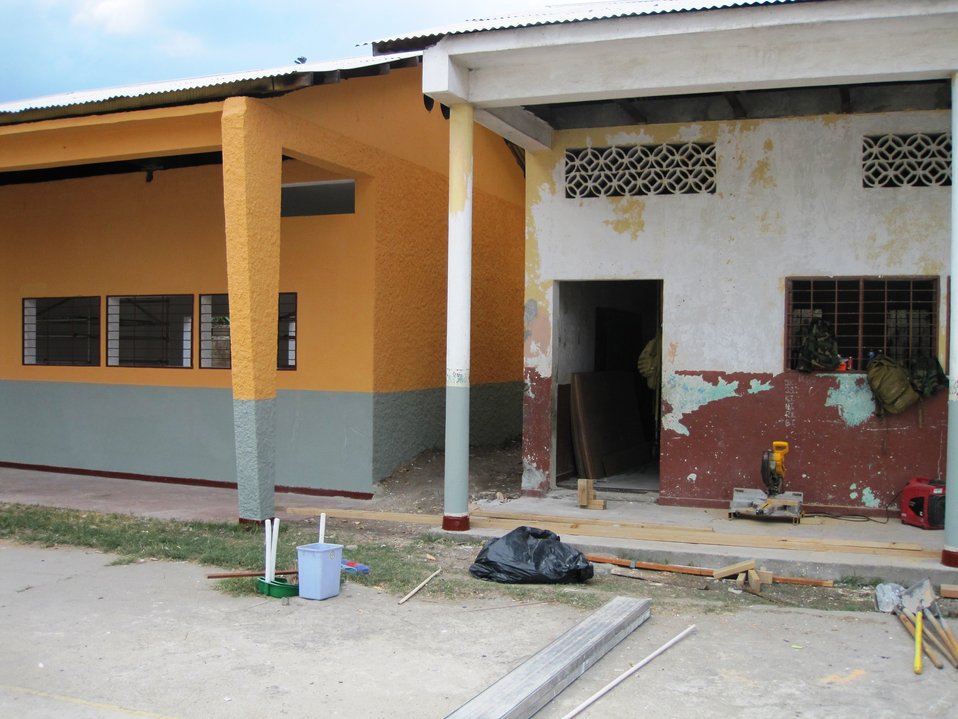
PP 2010 Renovates School Buildings

Pacific Partnership 2010 renovates the buildings at the Nu Laran school compound in Dili, Timor-Leste, in August 2010. This school represents one of the largest renovation efforts of any of the Pacific Partnership missions over the past four years.